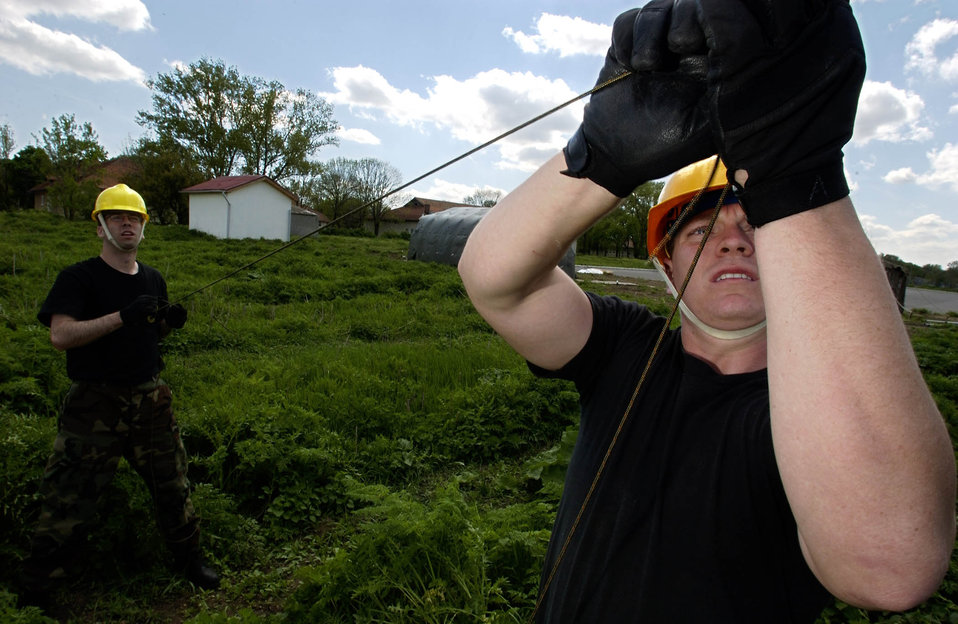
Airmen prepare Romanian base for exercise

MIHAIL KOGALNICEANU AIRFIELD, Romania -- Senior Airman Jason Dunigan (left) anchors a line as Senior Airman Lawrence Tobin tightens a rope for a 50-foot-high mast with a modulator here for exercise Combined Endeavor 2005. The exercise will test the interoperability of communications systems among 1,200 servicemembers and civilians from more than 43 countries.